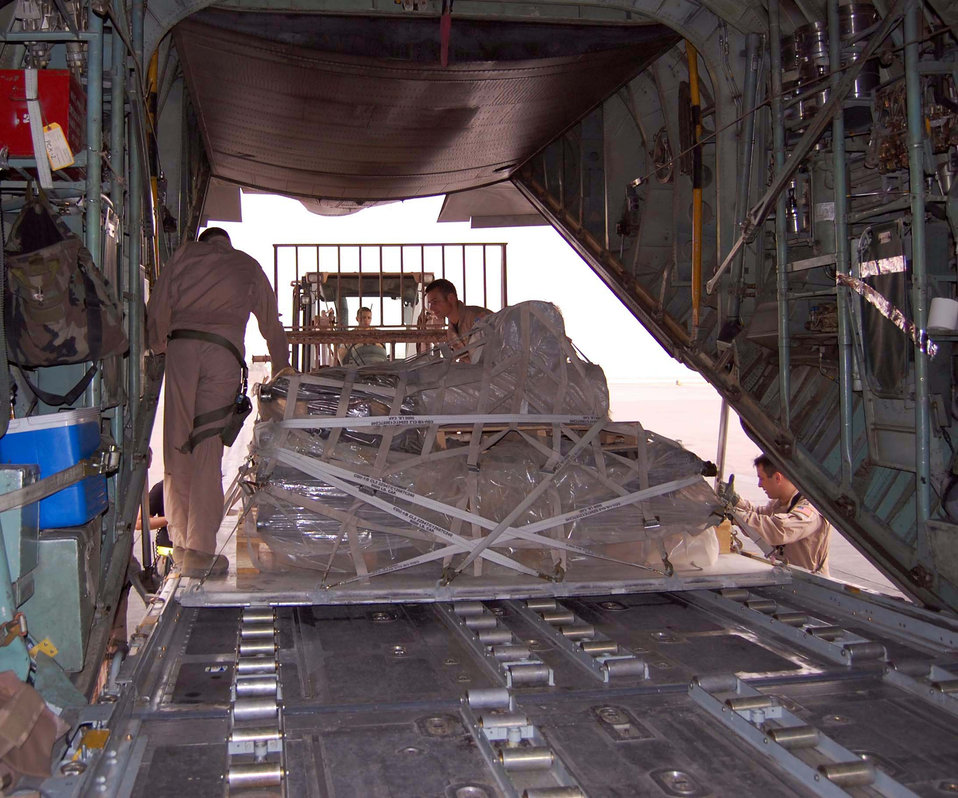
Ramstein Airmen join team in Iraq

Loadmasters guide a pallet of equipment into the cargo area of a waiting C-130 Hercules at Ramstein Air Base, Germany, Oct. 11. They ensure the load fits properly which is essential for safe transport.